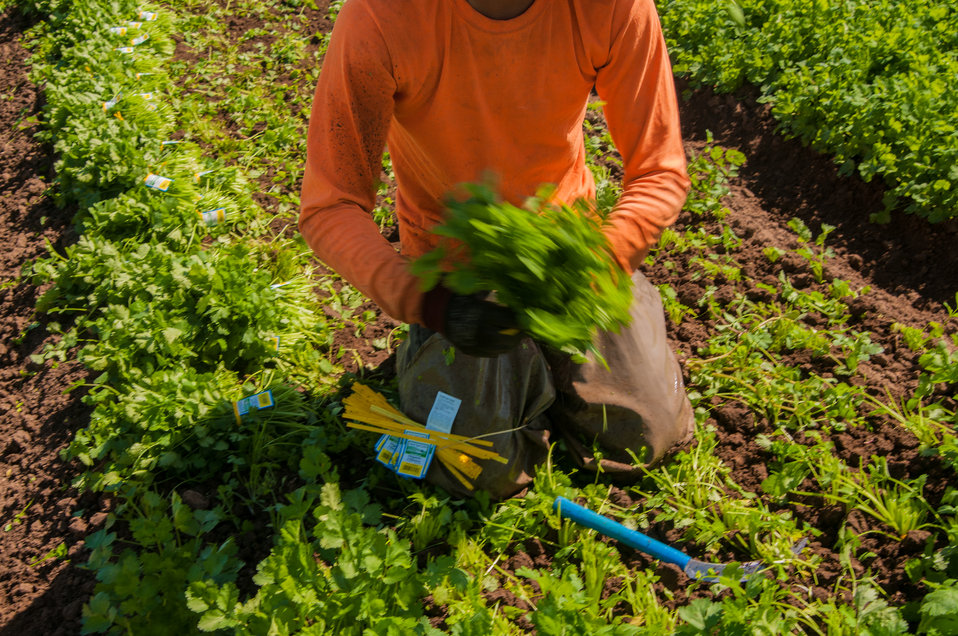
Migrant workers harvest Lettuce at Lakeside Organic Gardens in Watsonville, CA on Tuesday, Aug. 27, 2013.